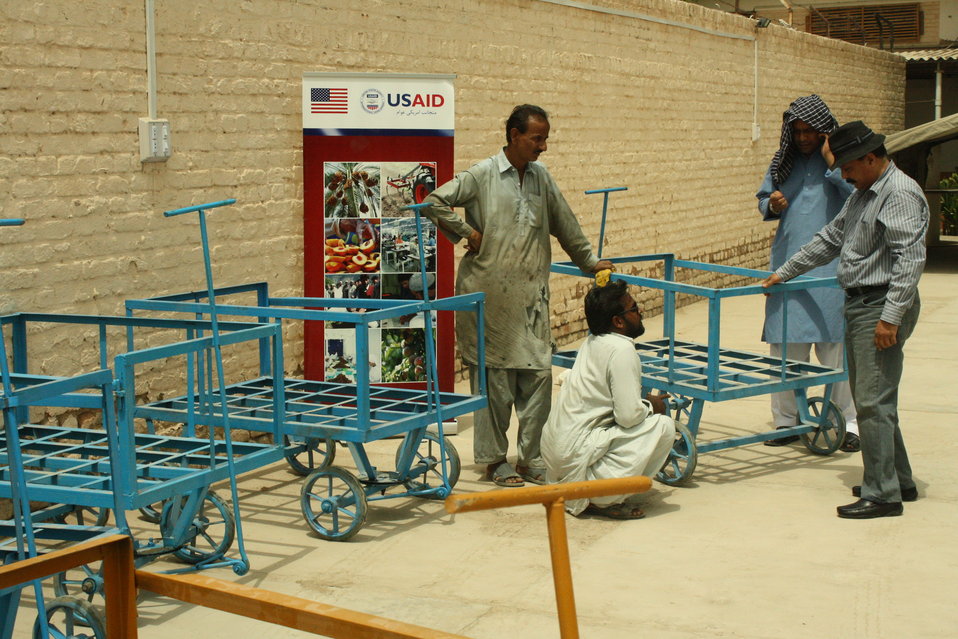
USAID is enhancing on-farm and processor-level infrastructure to maximize the standardized output required to cater to the demand from global markets.